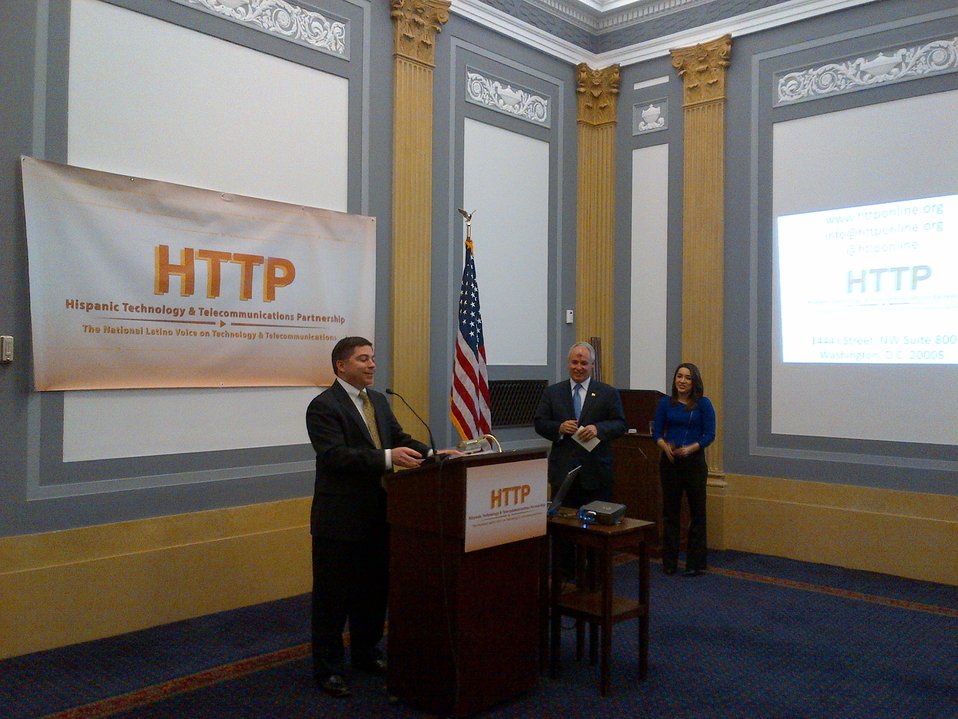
3.5.2014 Hispanic Technology and Telecommunications Partnership (HTTP) relaunch reception

Commissioner O'Rielly giving remarks at the Hispanic Technology & Telecommunications Partnership (HTTP) relaunch reception March 5, 2014